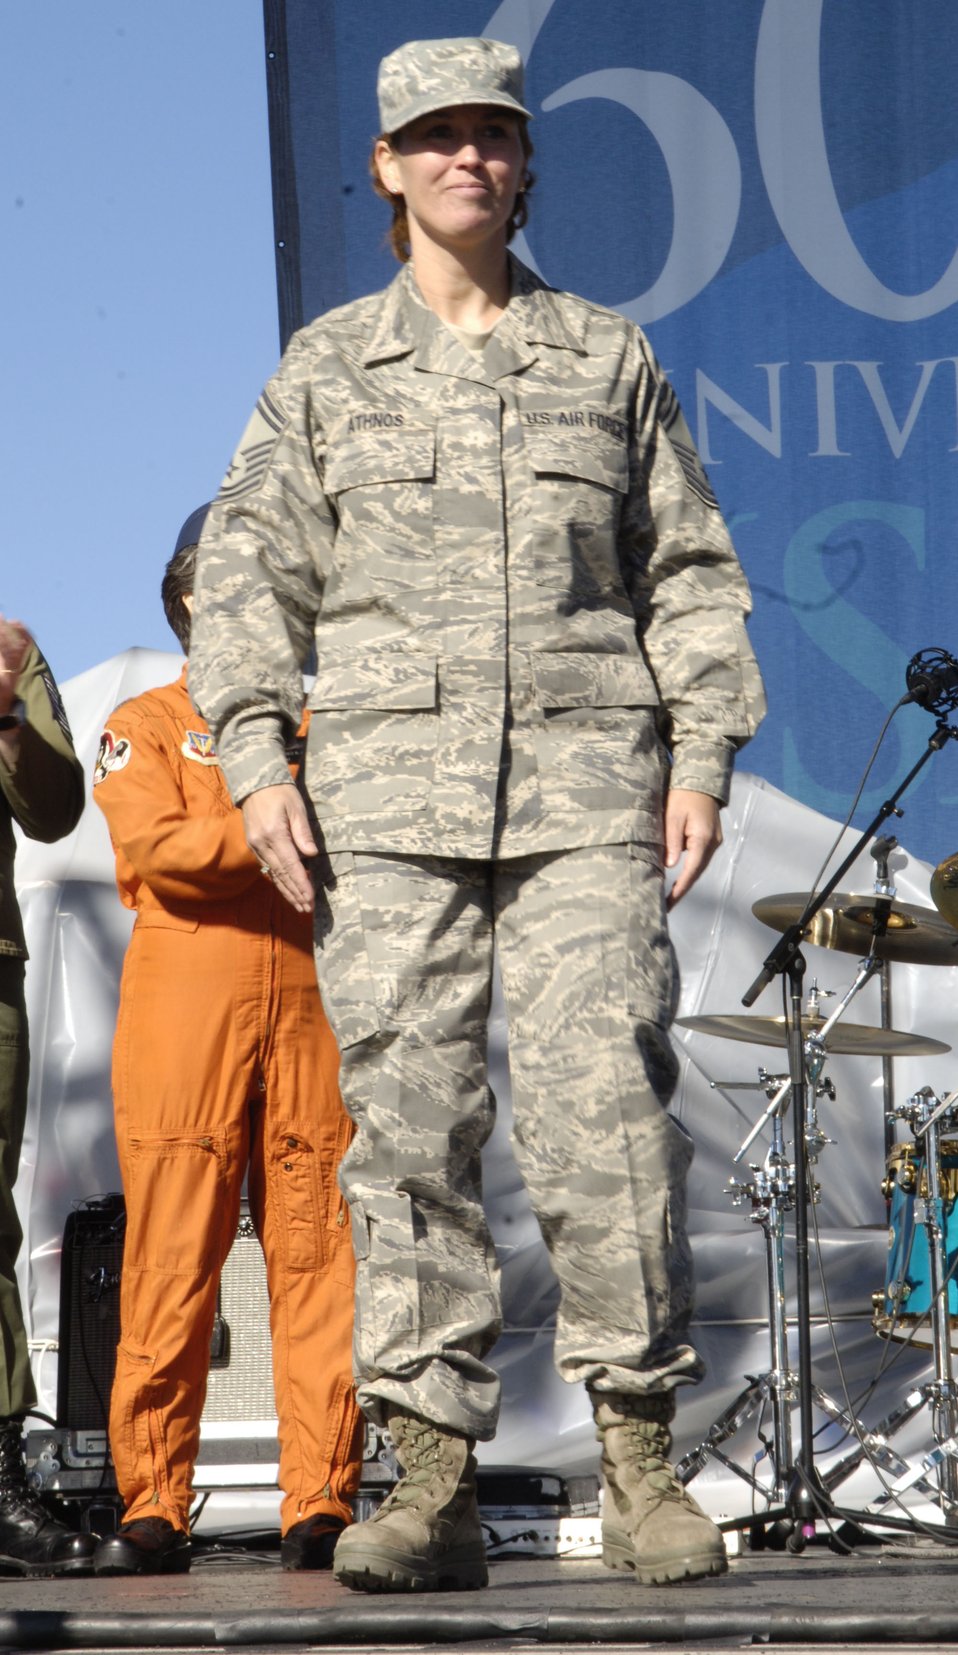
Air Force Memorial

Current and former members of the United States Air Force and its predecessor organizations present a parade of uniforms at an Air Force open house at the Pentagon on Saturday, Oct. 14, 2006. The open house is running in conjunction with the official ceremony to dedicate the Air Force Memorial. President George W. Bush will join Senior Defense Dept. and Air Force officials in a ceremony to present the memorial to the Nation. Designed by the late James Ingo Freed the memorial with its three soaring spires inspired by the U.S. Air Force Thunderbirds bomb burst manuever, pays tribute to and honors the patriotic men and women of the U.S. Air Force and its predeccessor organizations. An open house will run near the Pentagon in conjunction with the dedication ceremony which will feature performances by the U.S. Air Force Band, the U.S. Air Force Honor Guard drill team, and will culminate with a concert featuring country music performer LeeAnn Womack.